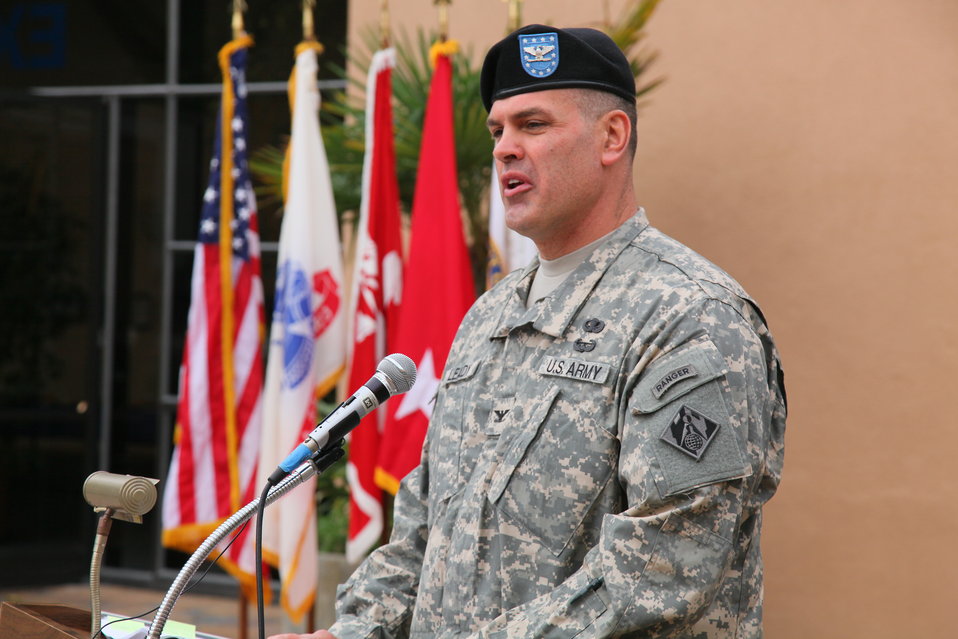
Col. Bill Leady gives a farewell speech to the South Pacific Division

Col. Bill Leady gives a farewell speech after relinquishing command of the Corps' South Pacific Division to Col. Mike Wehr in a ceremony June 3, 2011 at the Corps' Bay Model visitor center in Sausalito, Calif.. Leady returns now to his former position as commander of the Corps' Sacramento District after his temporary assignment as the commander of the South Pacific Division.